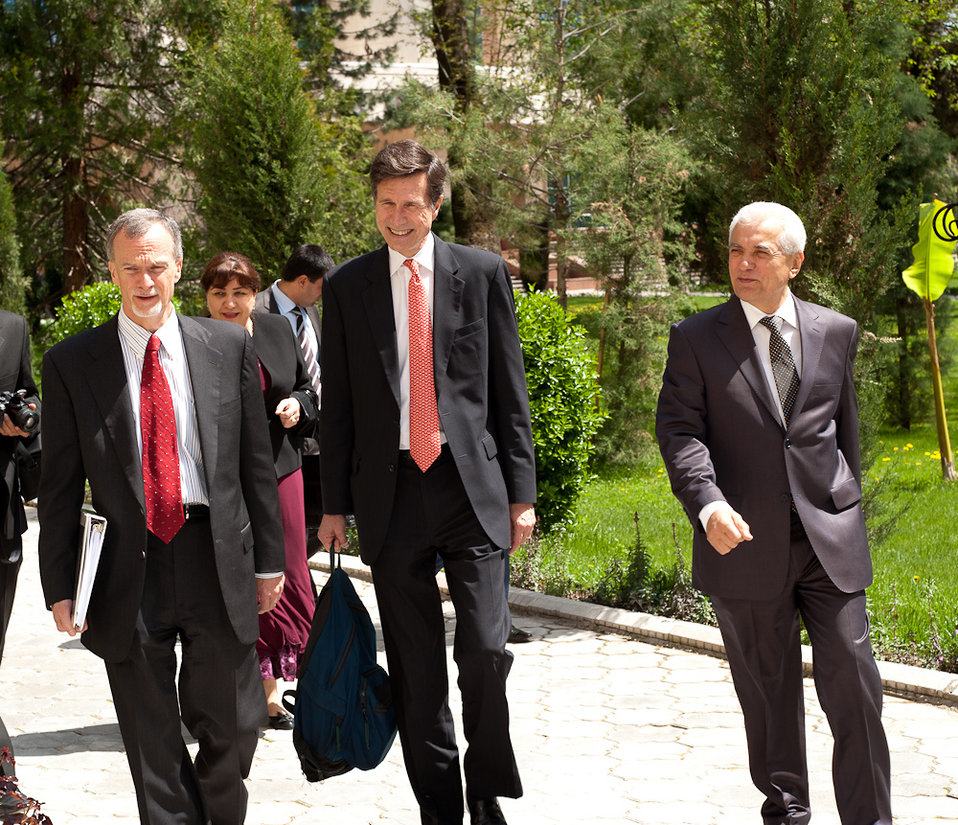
Assistant Secretary Blake Leads U.S. Government-Interagency Delegation to U.S.-Tajikistan Annual BIlateral Consultations

U.S. Assistant Secretary of State for South and Central Asian Affairs, Robert O. Blake, Jr. leads the U.S. government-interagency delegation to the second U.S. - Tajikistan Annual Bilateral Consultations in Dushanbe, Tajikistan, April 11 - 12, 2011. [Damian Wampler/ State Department photo/ Public Domain]